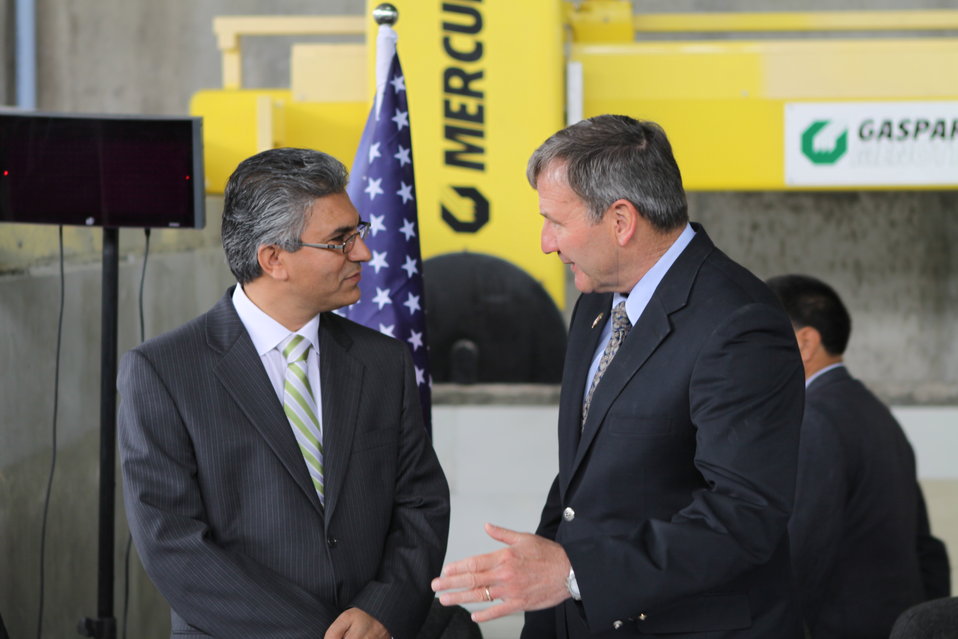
100525 Hirat Marble Conference 113